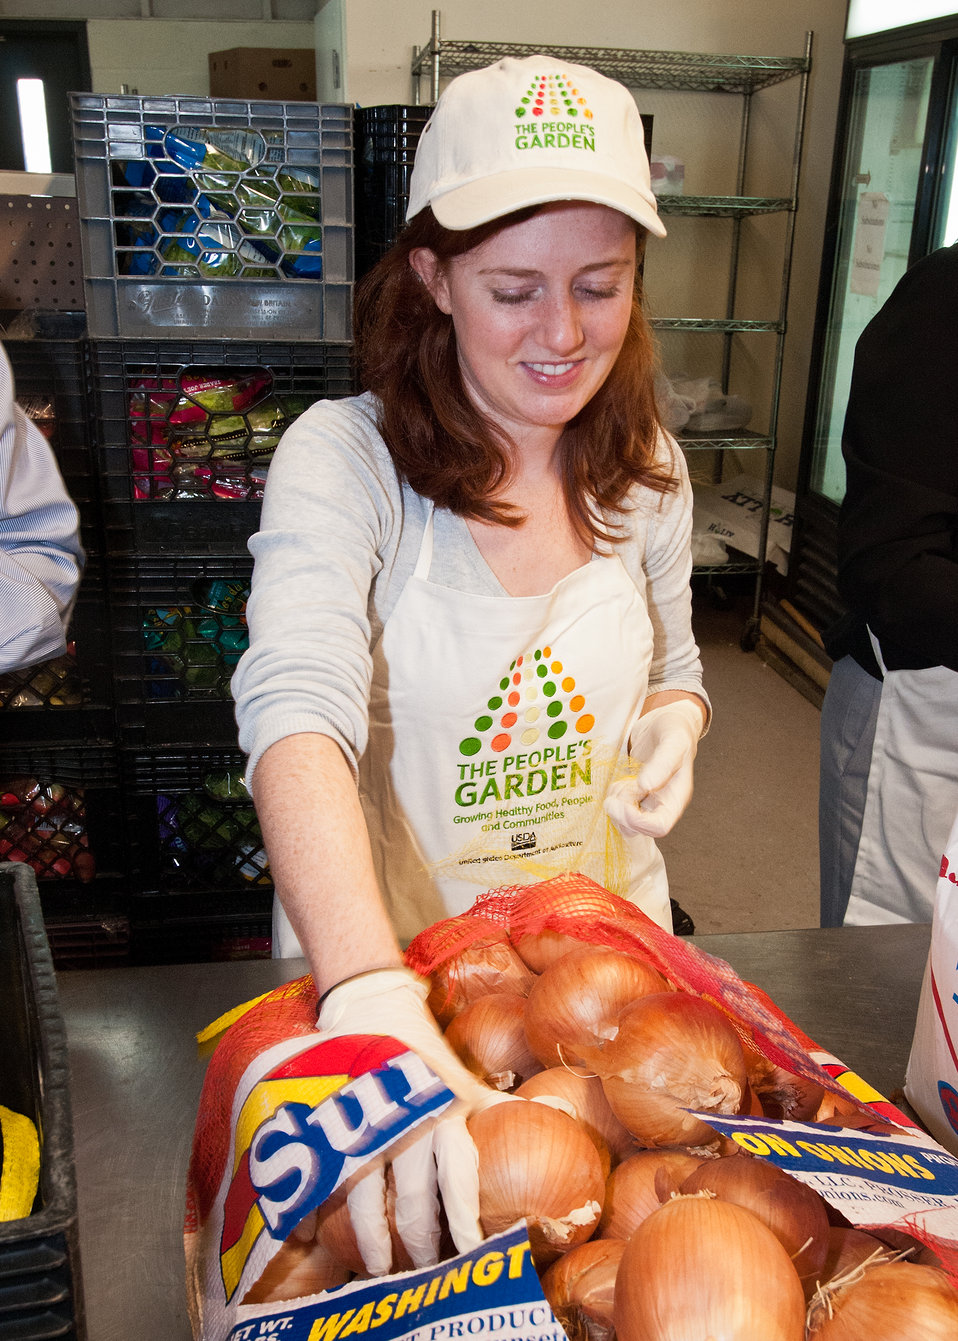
Brooke Barron, Special Assistant to Deputy Agriculture Secretary Dr. Kathleen Merrigan fills mesh bags with onions to be distributed by the Arlington Food Assistance Center in Arlington, Virginia, on Thursday, January 12, 2012. Agriculture Secretary Tom Vilsack designated January 12 as the United States Department of Agriculture’s Martin Luther King Day of Service to recognize Dr. King’s contributions to the Civil Rights Movement. The AFAC is Arlington, Virginia’s food pantry providing supplemental and nutritious food free of charge to Arlington families who cannot afford to purchase all the food they need.